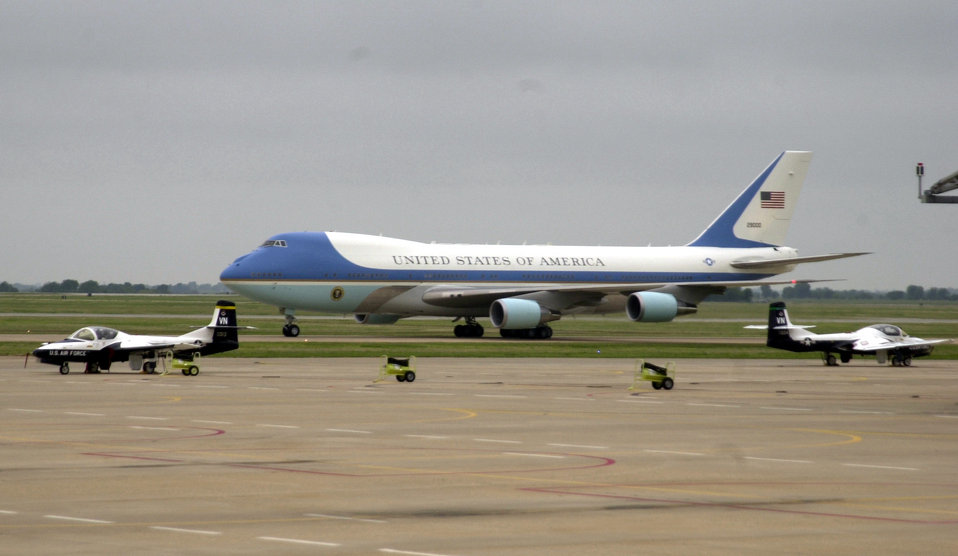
Commander in chief visits Vance AFB

Air Force One lands at Vance Air Force Base, Okla., on Saturday, May 6, 2006. President George W. Bush stopped at Vance on his way to Oklahoma State University in Stillwater to give the commencement address.